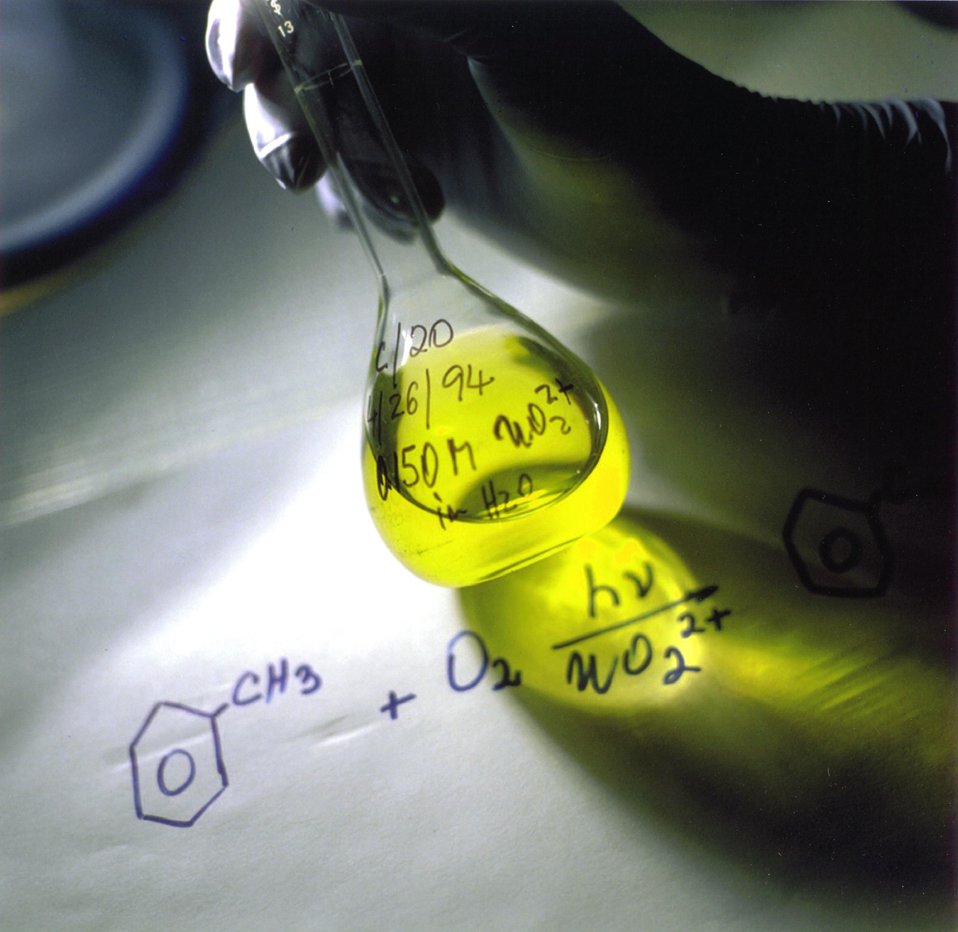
EXCITED URANIUM IS A CATALYST FOR THE PHOTO CHEMICAL OXIDATION OF TOLUENE TO BENZALDEHYDE.

AMES LAB IS INVESTIGATING THE USE OF VISIBLE LIGHT TO DRIVE CERTAIN CHEMICAL REACTIONS. IN SOME EXPERIMENTS, EXCITED URANIUM IS USED AS A PHOTO SENSITIZER, ABSORBING VISIBLE LIGHT TO DRIVE THE PARTIAL OXIDATION OF SATURATED HYDROCARBONS.